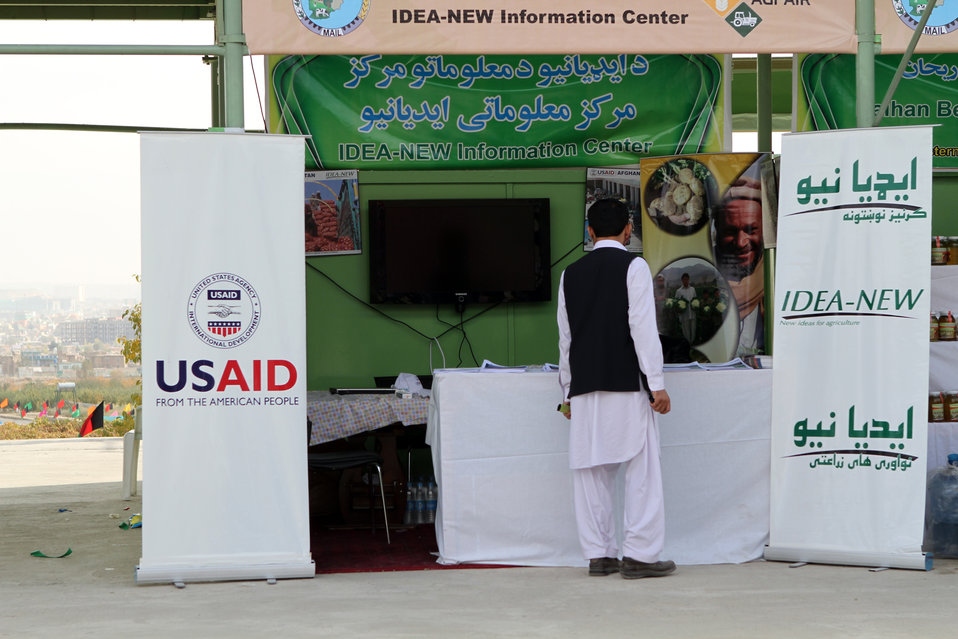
Agfair event